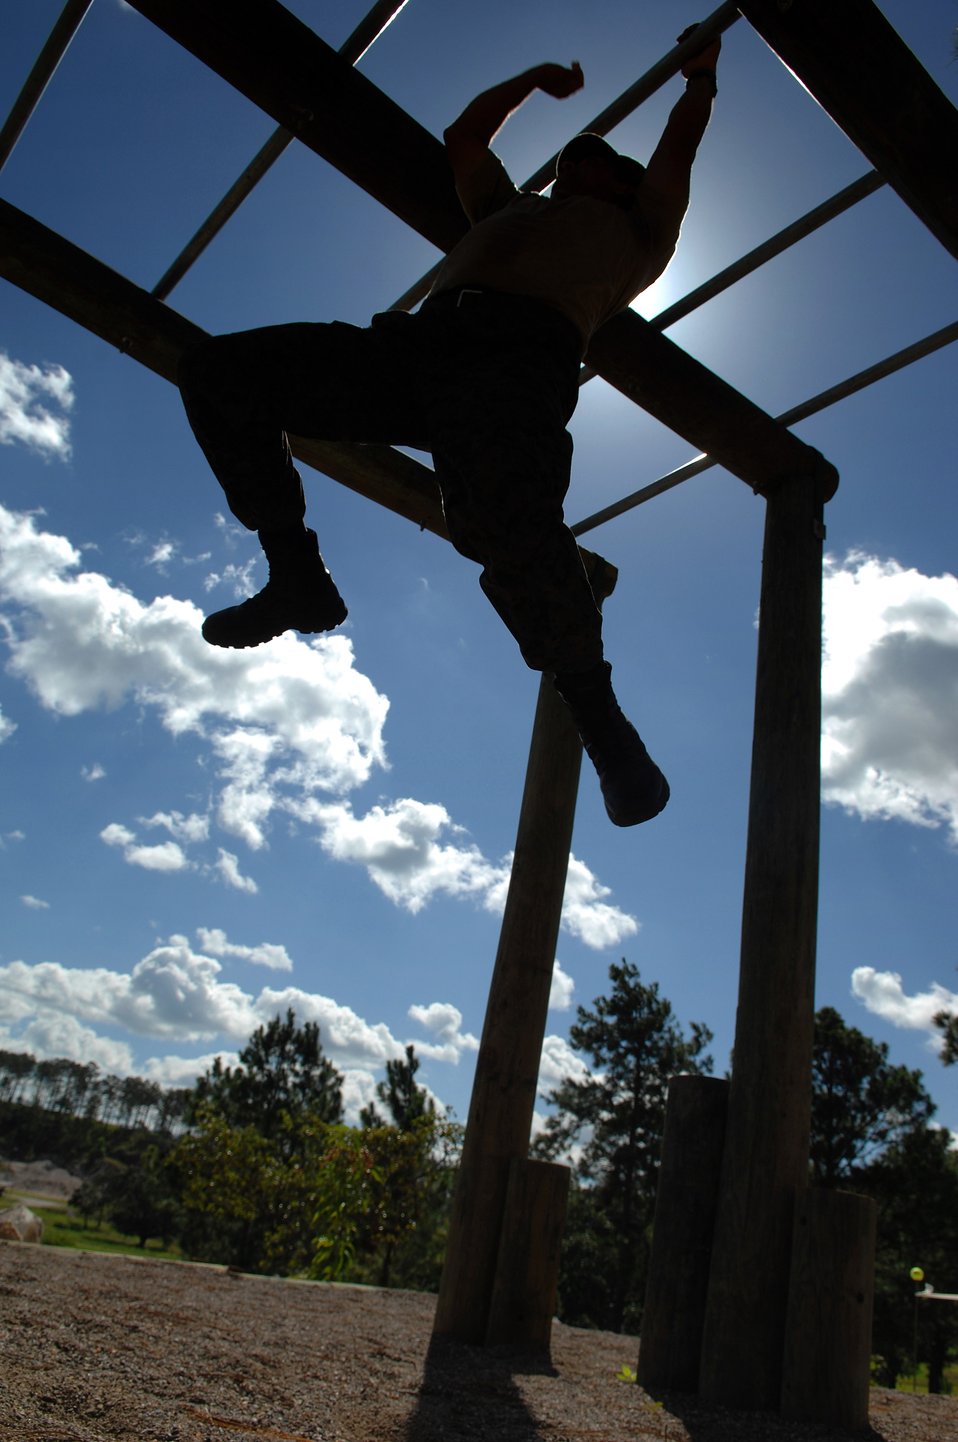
Up and over

A U.S. Special Operations special forces instructor demonstrates the proper technique on the obstacle course during Exercise Fuerzas Comando 07 in La Venta, Honduras. The exercise brings together special operations forces from Central and South America, Jamaica and the U.S. to promote cooperation and interoperability.